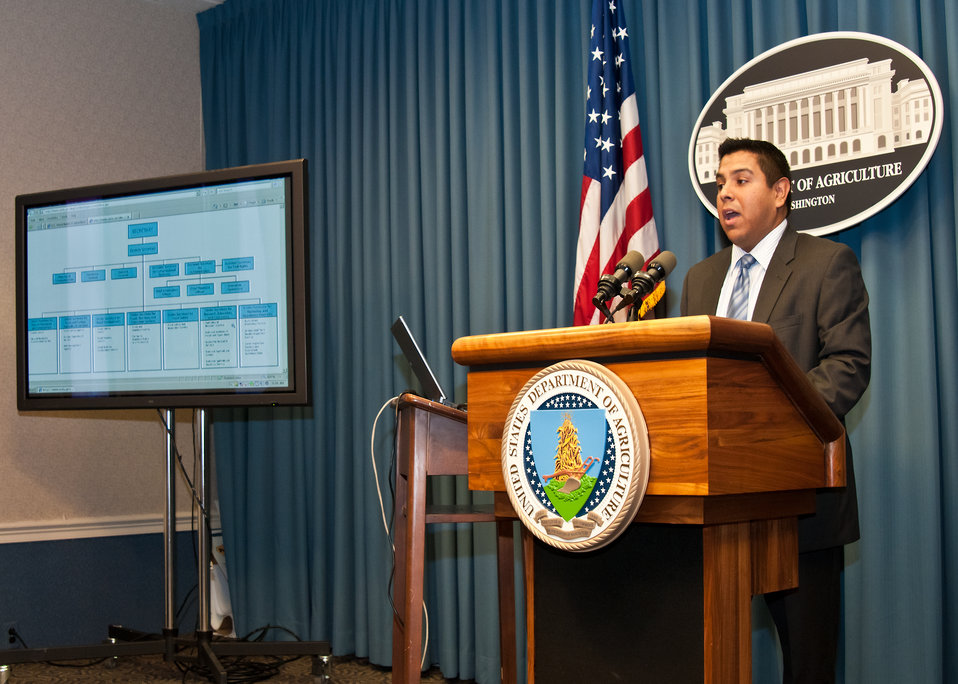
Hispanic Serving Institutions Program representative Ramiro Porras welcomes United States Department of Agriculture (USDA) Hispanic Association of Colleges and University (HACU) and Tribal College summer interns during their orientation at USDA in Washington, DC, Monday, Jun. 6, 2011. The HACU/Tribal College National Internship Program represents more than 400 colleges and universities committed to higher education in the U.S., Puerto Rico, Latin America, Spain and Portugal and places student interns each year with federal agencies in Washington, DC or in field offices around the country.